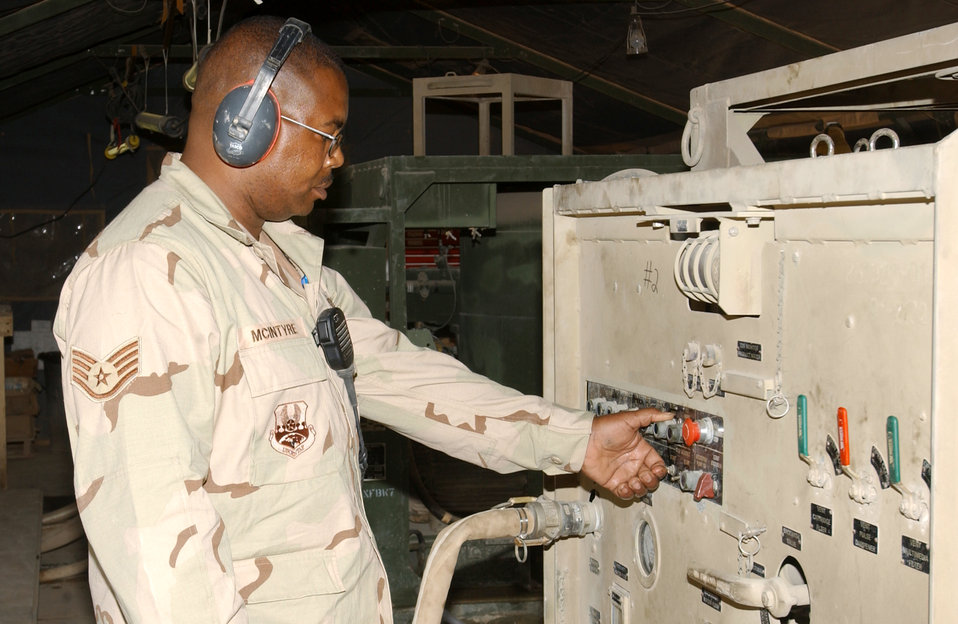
Pure unit

TALLIL AIR BASE, Iraq -- Staff Sgt. Max McIntyre runs a reverse osmosis water purification unit to make servicable water for military members deployed here April 15 in support of Operation Iraqi Freedom. Sergeant McIntyre is a member of the 407th Expeditionary Civil Engineer Squadron.